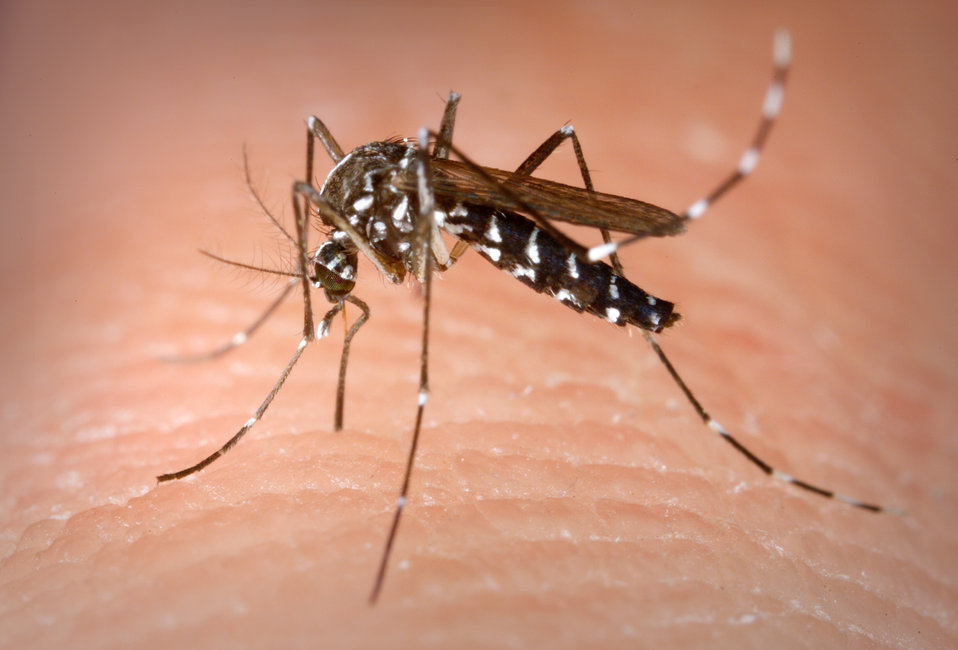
This is an Aedes albopictus female mosquito obtaining a blood meal from a human host.